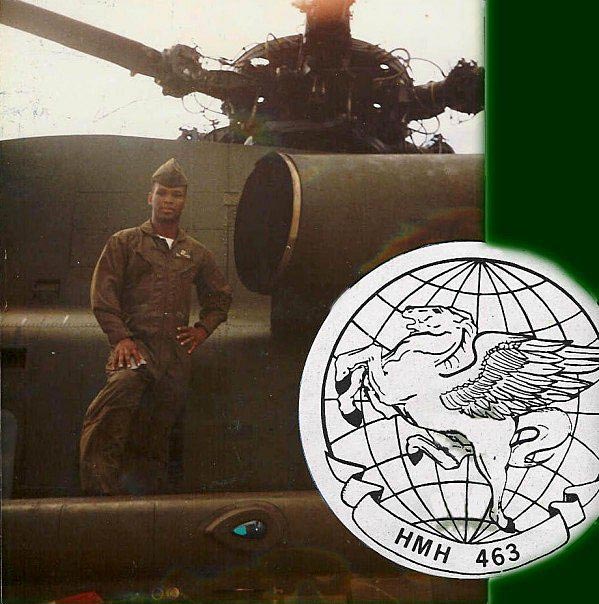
Pat Edwards served in the Marine Corps from 1983 to 1987 with squadron HMH 463 at Marine Corps Air Station (now Marine Corps Base) Kaneohe Bay, Hawaii. He now works with the Division of Diversity and Civil Rights in the Pacific Region.